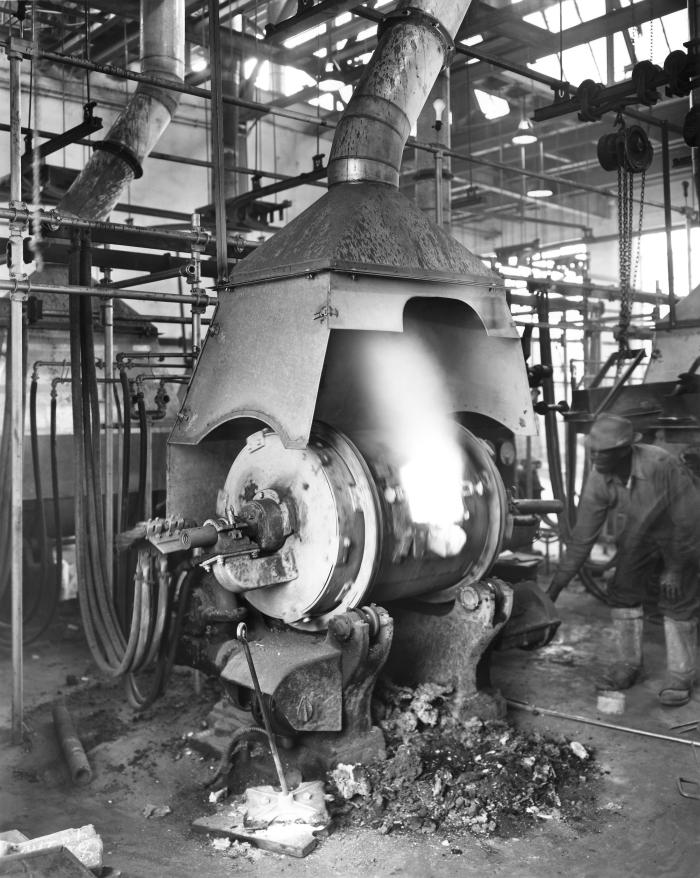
This historical photograph, provided by the Center for Disease Control's (CDC), National Institute for Occupational Safety and Health (NIOSH), depicted an overhead Kirk & Blum Co. exhaust ventilation hood, in the 'On' position, inside the Cincinnati, OH, William Powell Valve Co. factory. Note the pressurized gasses being expelled from the chamber beneath the hood, which were being drawn up into the unit's overhead exhaust system. It was not known from this image whether or not these gasses were toxic, or noxious. See PHIL #9641 for another view of this scenario, however, in that view, the vent was in the 'Off' position, and was not ingesting the expelled fumes.